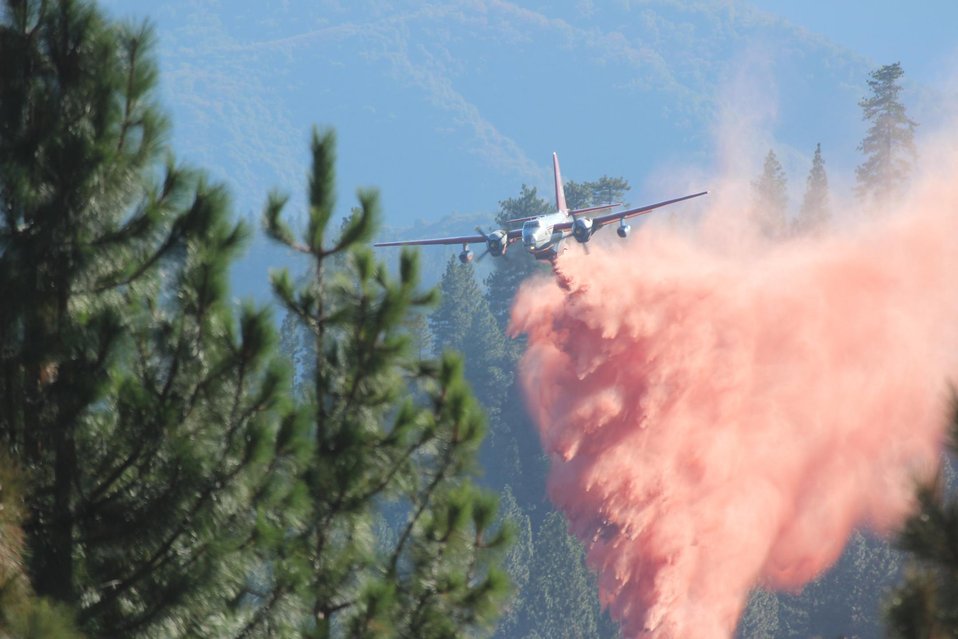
An air tanker drops chemical fire retardant below Pilot Peak at the Rim Fire. The Rim Fire in the Stanislaus National Forest near in California began on Aug. 17, 2013 and is under investigation. The fire has consumed approximately 199,237 acres and is 32% contained.